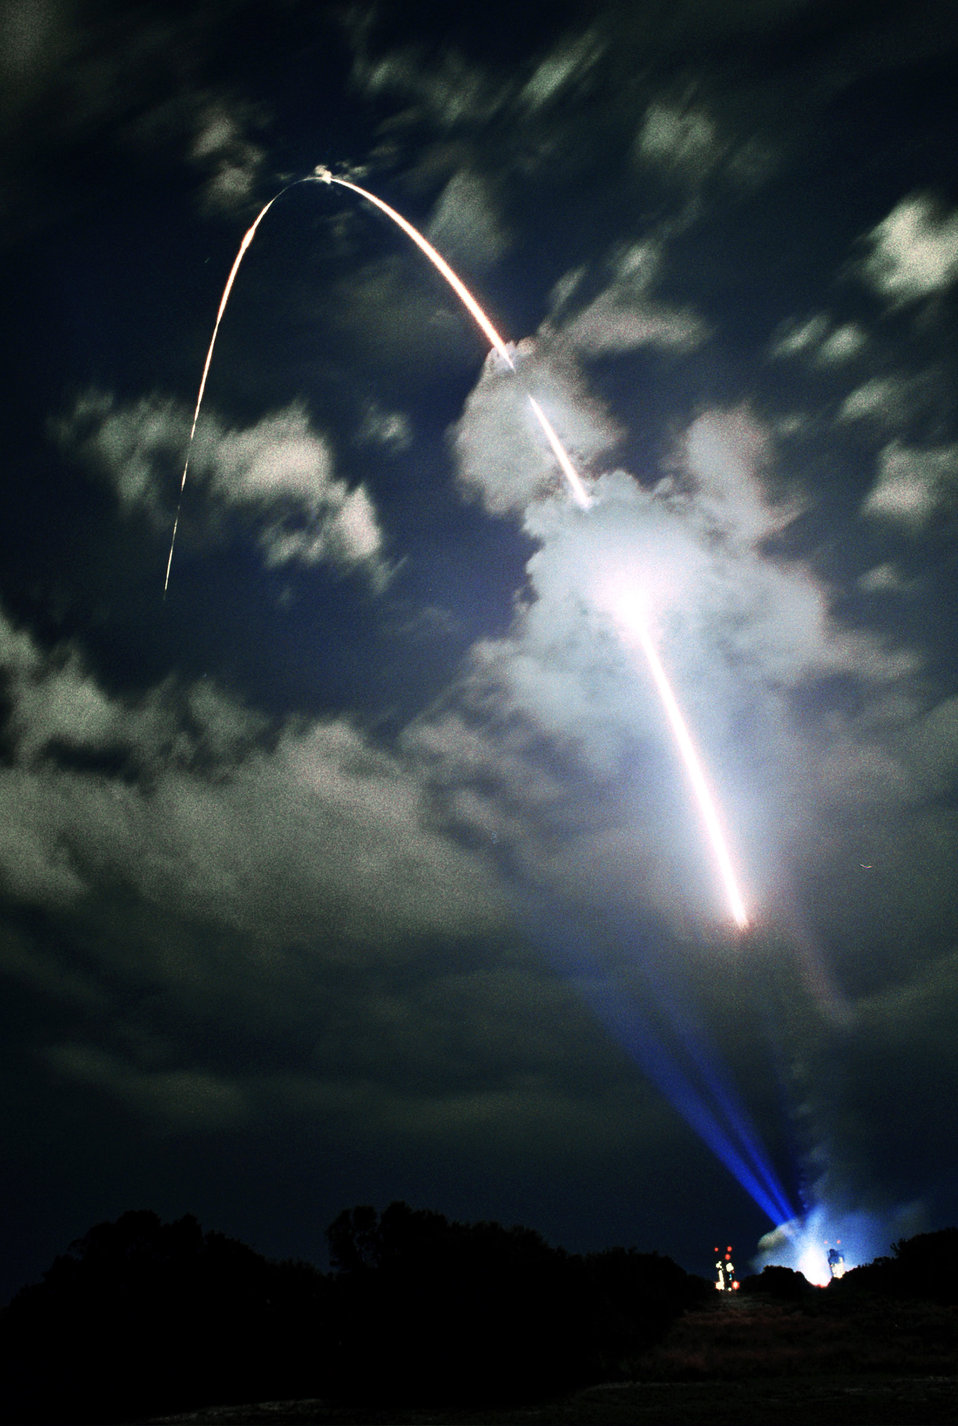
GPS satellite blasts off from Cape Canaveral

CAPE CANAVERAL AIR FORCE STATION, Fla. -- A Delta II launch vehicle carries a Global Positioning System navigation satellite into orbit from here Nov. 6.